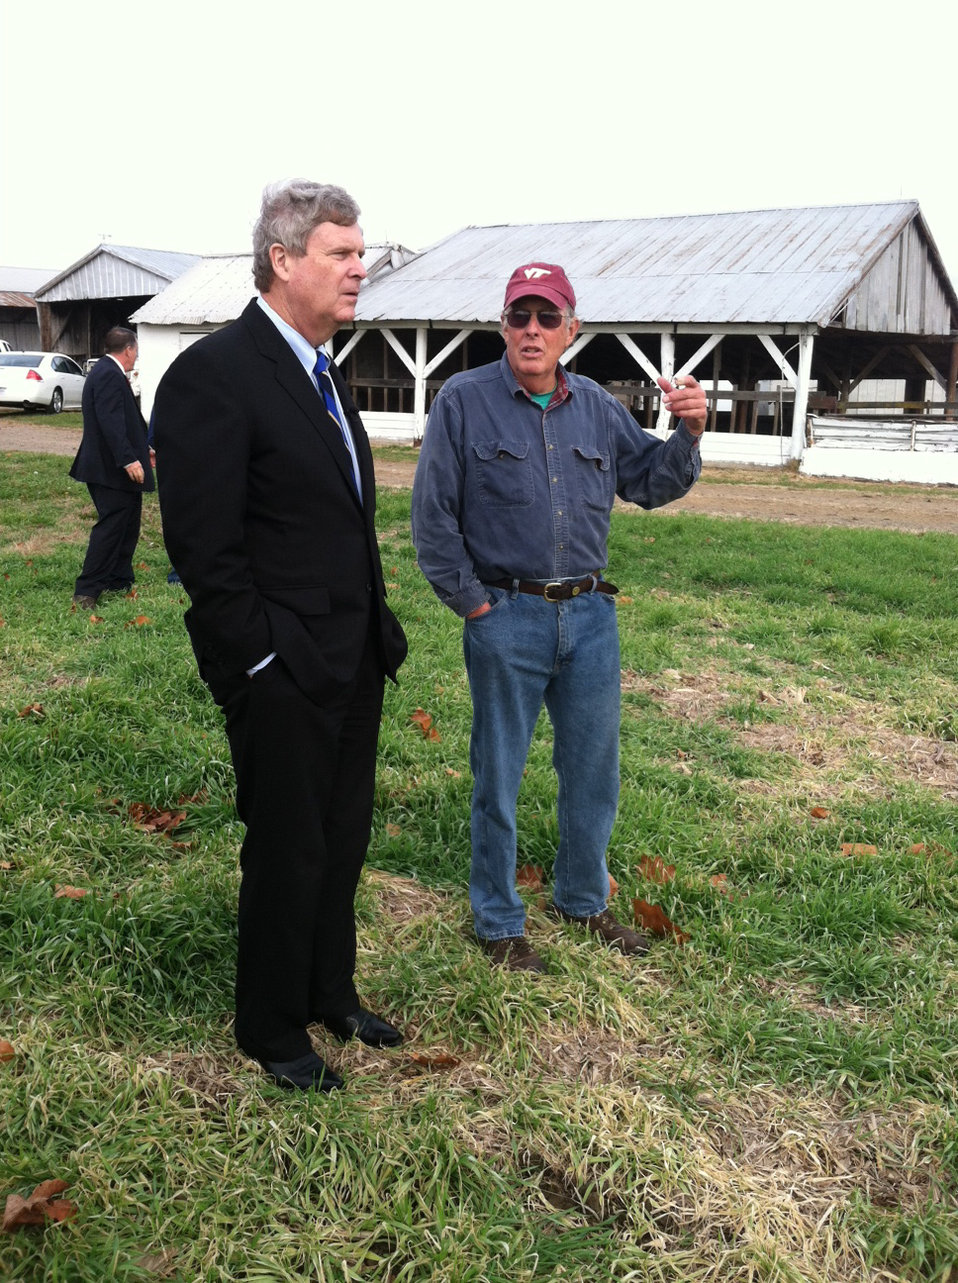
photo

Sole Proprietor of Silver Ridge Farm Edward Gerald 'Gerry' Silver discusses conservation efforts with Agriculture Secretary Tom Vilsack at Silver Ridge Farm in Stafford County, VA on Dec. 5, 2013.